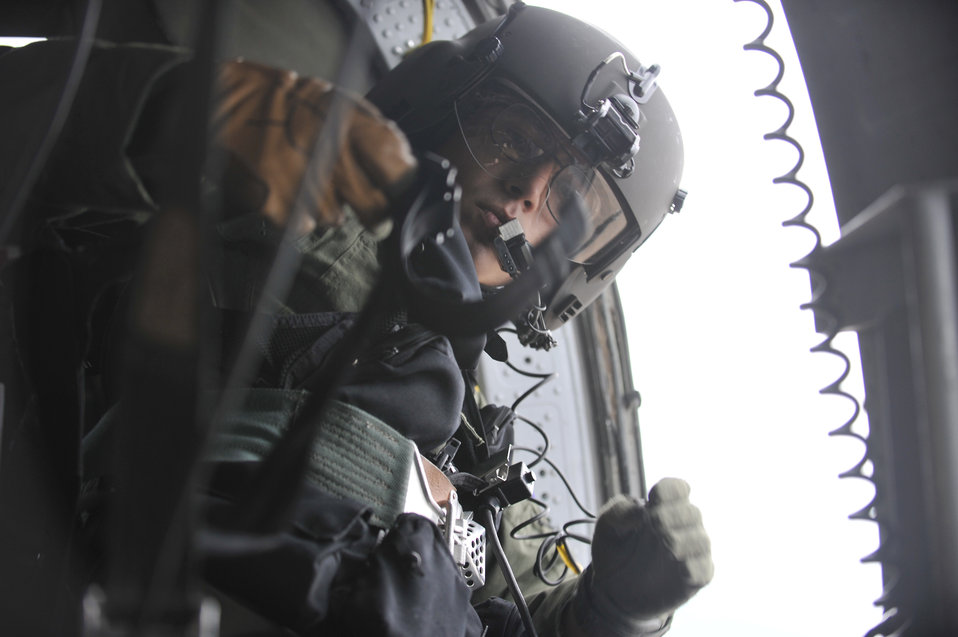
Helicopter crews train at Kirtland AFB

Staff Sgt. Logan Ayala gets himself situated during a training flight Aug. 25, 2009, near Kirtland Air Force Base, N.M. Sergeant Ayala is a student flight engineer assigned to the 58th Training Squadron.